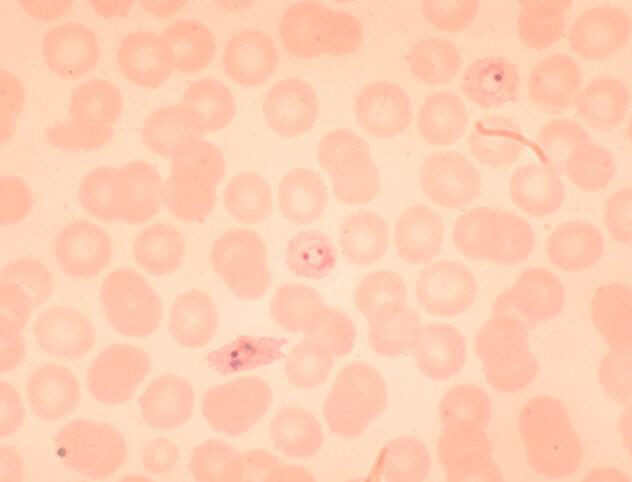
Plasmodium ovale rings, doubly infected erythocyte.